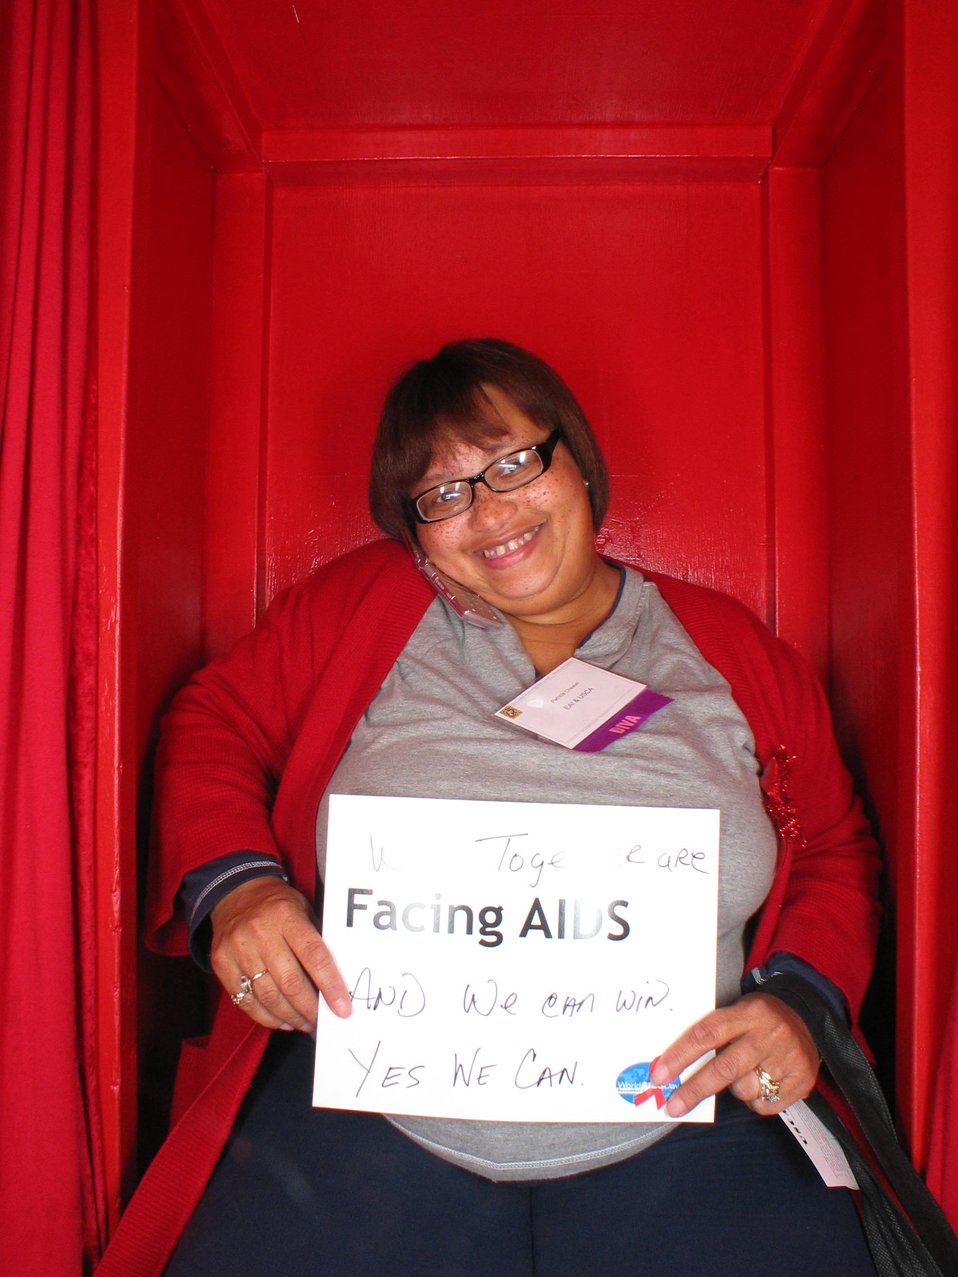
Facing AIDS We can win. Yes We can!